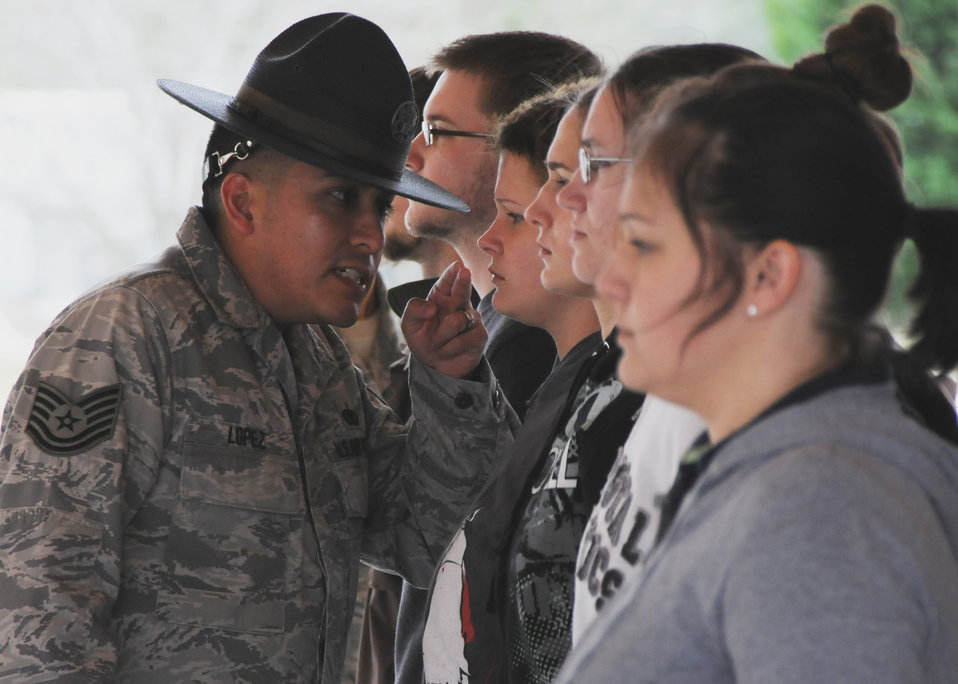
Former BMT instructors give new Reserve recruits glimpse at 'Basic'

Tech. Sgt. Raul Lopez corrects a new Air Force Reserve recruit Feb. 6, 2010, at Duke Field. Sergeant Lopez and his wife, Master. Sgt. Tiffany Lopez (pictured) both former active-duty military training instructors at Lackland Air Force Base, Texas, volunteered their time to help new reserve recruits prepare for basic training during the drill weekend here. The husband and wife team spent four years instructing new trainees at Lackland graduating 25 flights from Basic Military Training. Sergeant Tiffany Lopez is assigned to the 96th Force Support Squadron. Sergeant Raul Lopez is assigned to the 96th Logistics Readiness Squadron.